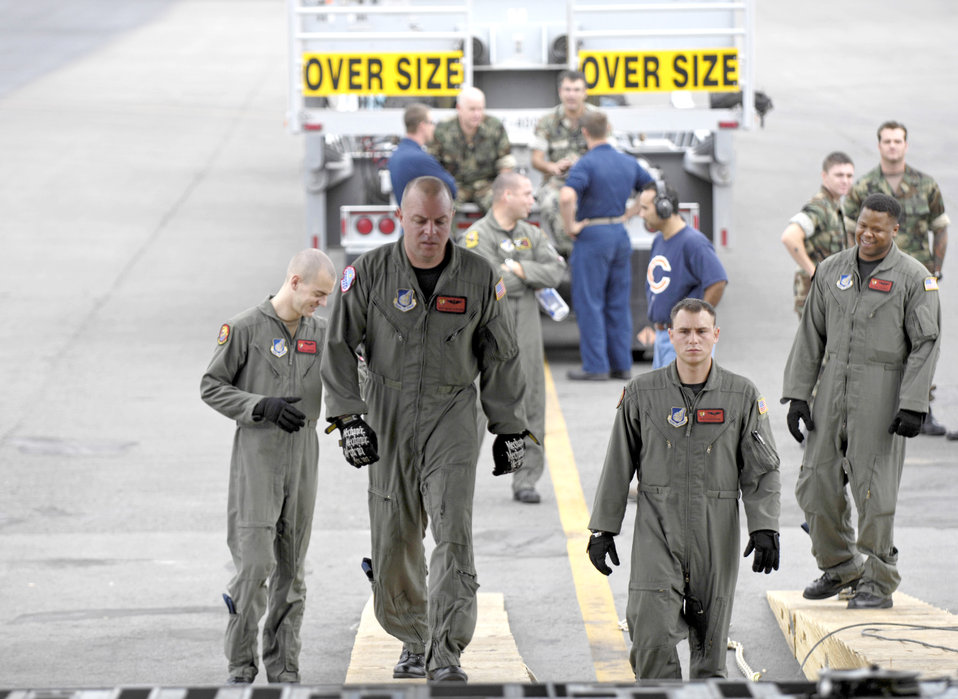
C-17 reaches dry dock

Loadmasters line up shoring to the back of a C-17 Globemaster III Dec. 2 at Hickam Air Force Base, Hawaii, in preparation for loading a dry dock transport vehicle. The flight was the first operational movement of a dry dock transport by a C-17. The Airmen are assigned to the 535th Airlift Squadron.